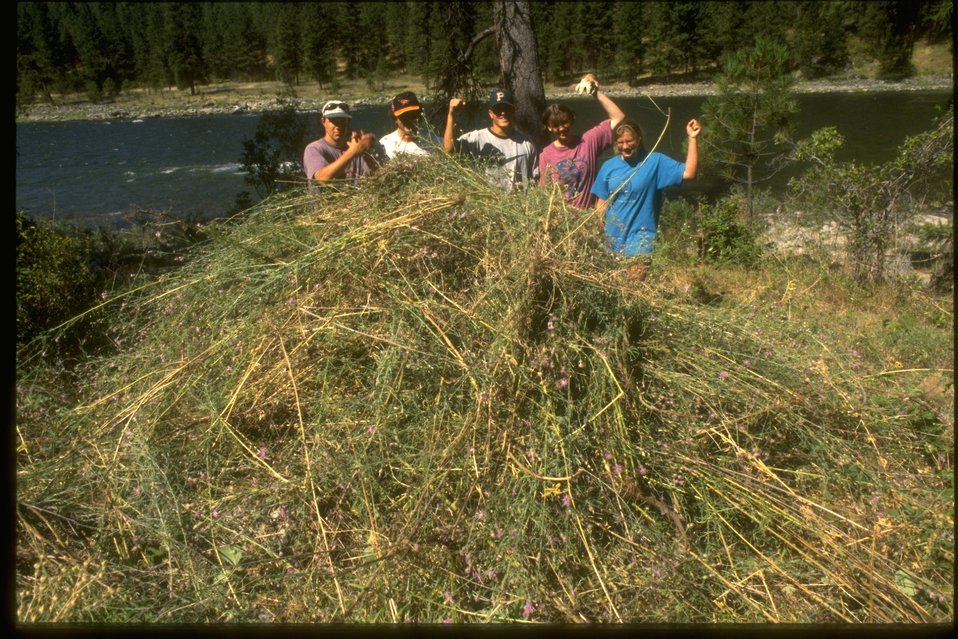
Boise High School students pulling knapweed along the Salmon River, Idaho.